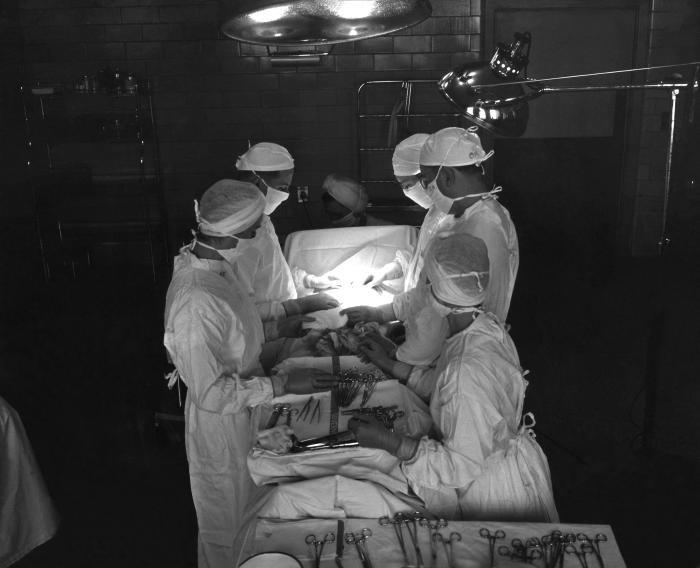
This 1950s historical photograph was provided by the Center for Disease Control's (CDC), National Institute for Occupational Safety and Health (NIOSH). It depicted the inside of an operating room suite during a surgical procedure. Following sterile protocol, the surgeons and nurses were all appropriately dressed in sterile garments consisting of head coverings, gloves, and surgical robes, which are all still worn to this day, though constructed of more complex materials that implement synthetics such as hypoallergenic polyesters.